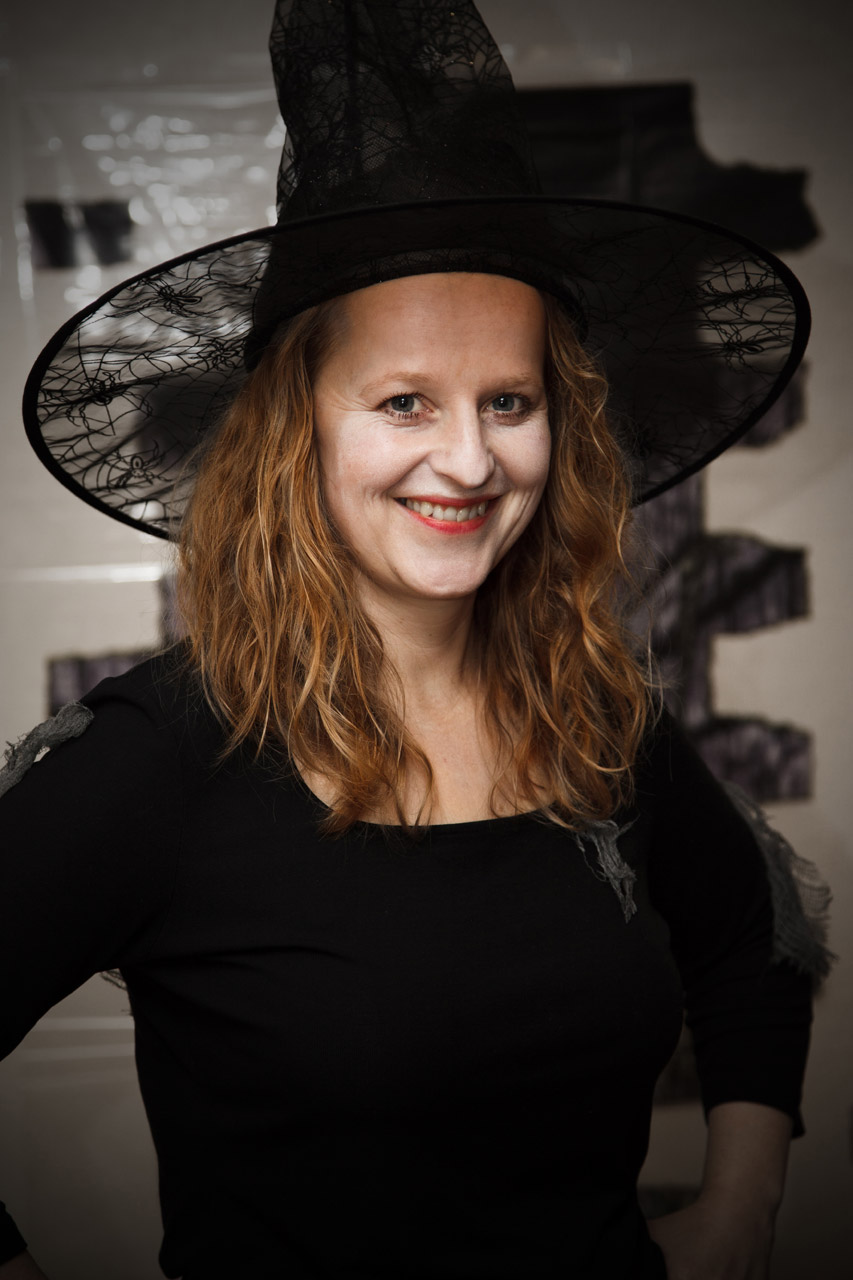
Witch portrait

Cute witch posing.